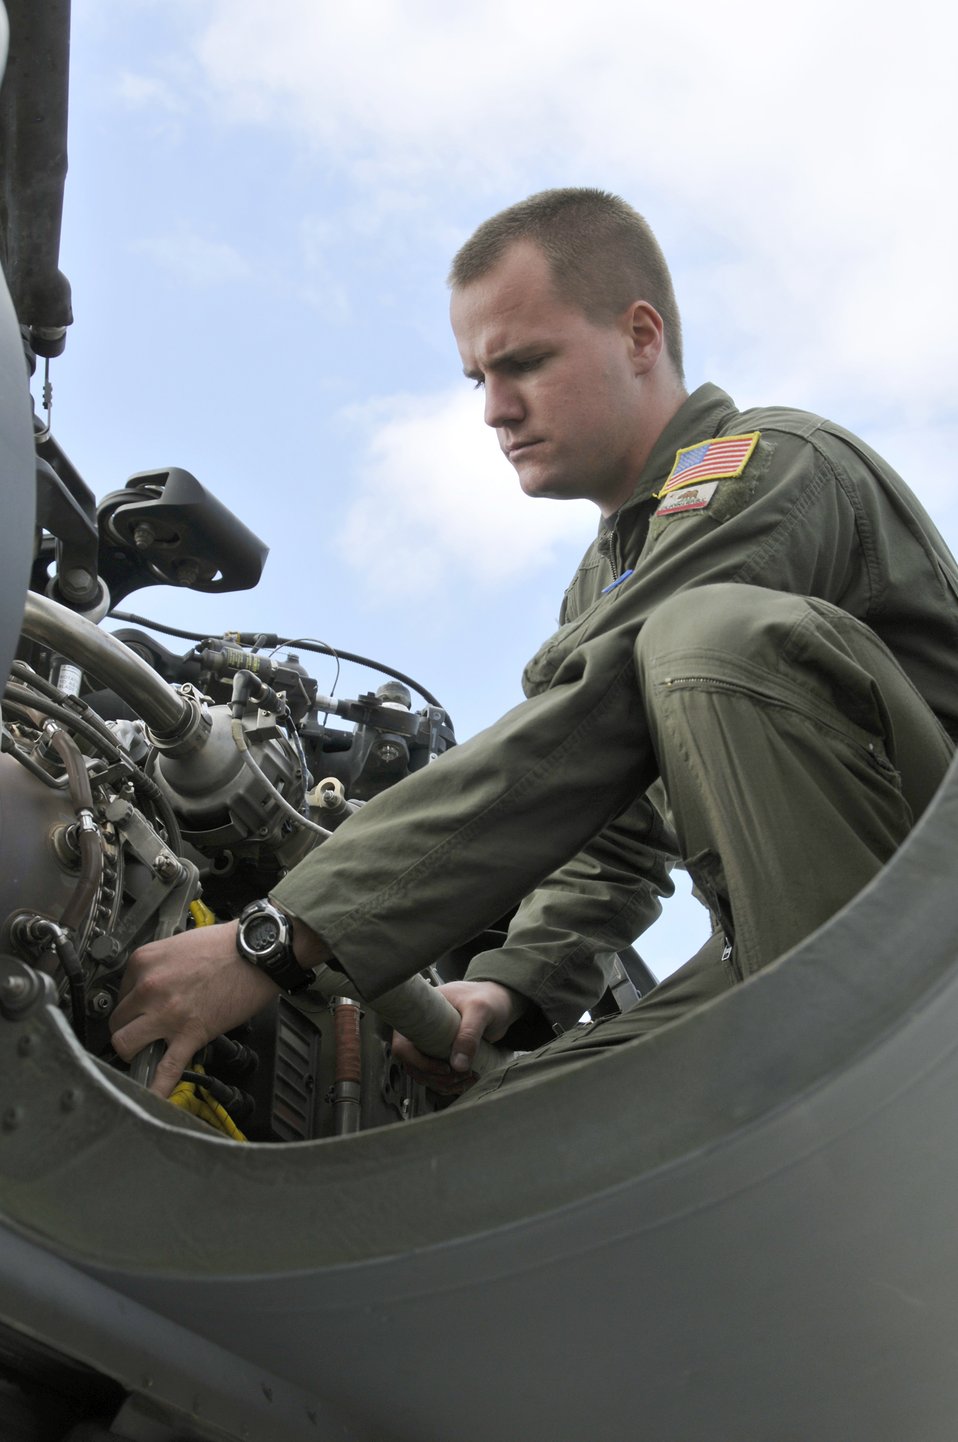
Getting it right

Senior Airman Jacob Ellwood conducts a preflight check on a HH-60G Pave Hawk helicopter Nov. 6, 2010, at Moffett Federal Airfield, Calif. Airman Ellwood is a flight engineer assigned to the California Air National Guard's 129th Rescue Squadron.